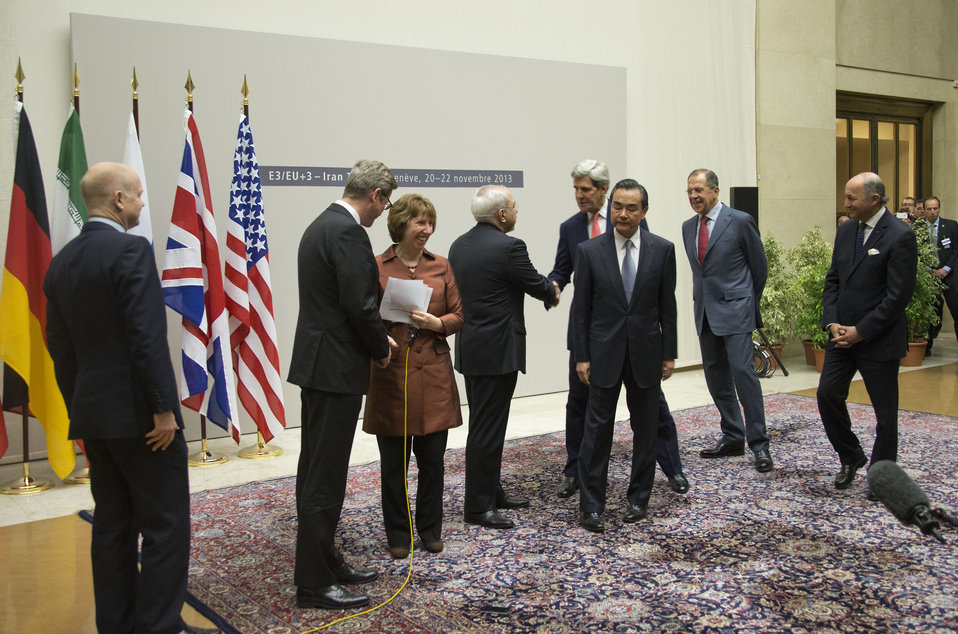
P5 1 Talks With Iran in Geneva, Switzerland

U.S. Secretary of State John Kerry shakes hands with Iranian Foreign Minister Javad Zarif after the P5 1 and Iran concluded negotiations about Iran's nuclear capabilities on November 24, 2013.